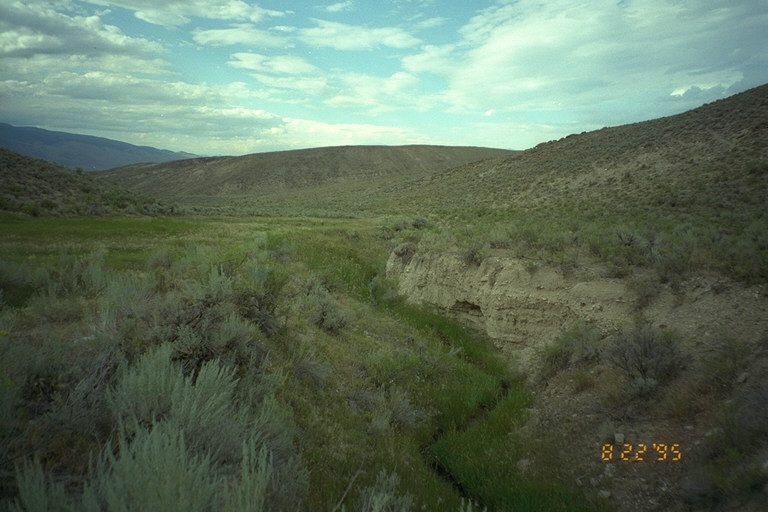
Riparian area Public Lands Salmon Field Office UCSC Upper Columbia Salmon Clearwater District